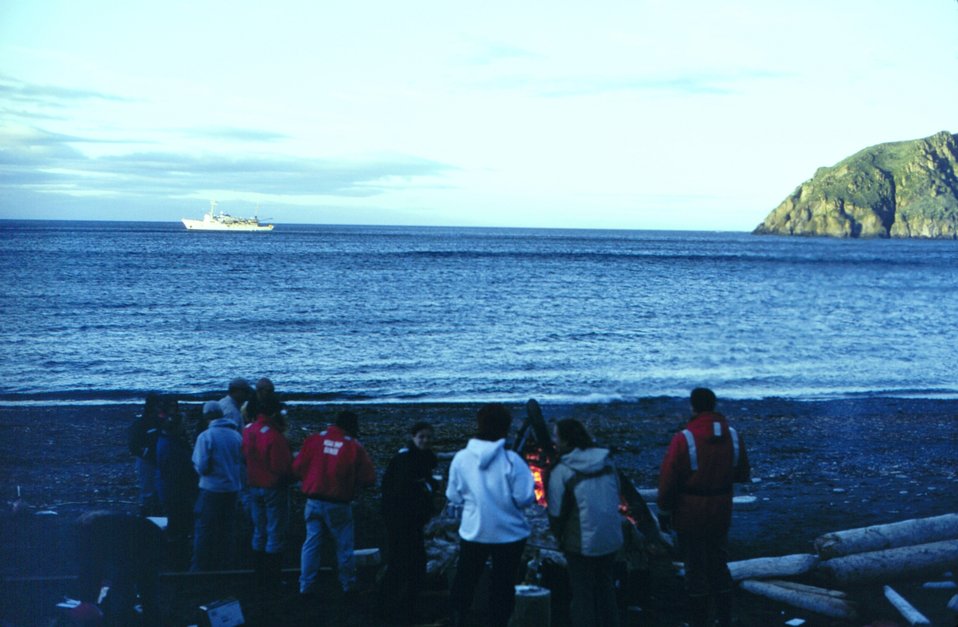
NOAA Ship RAINIER crew beach party at Chowiet Island in the Semidi Island group southwest of Kodiak Island. RAINIER in background.